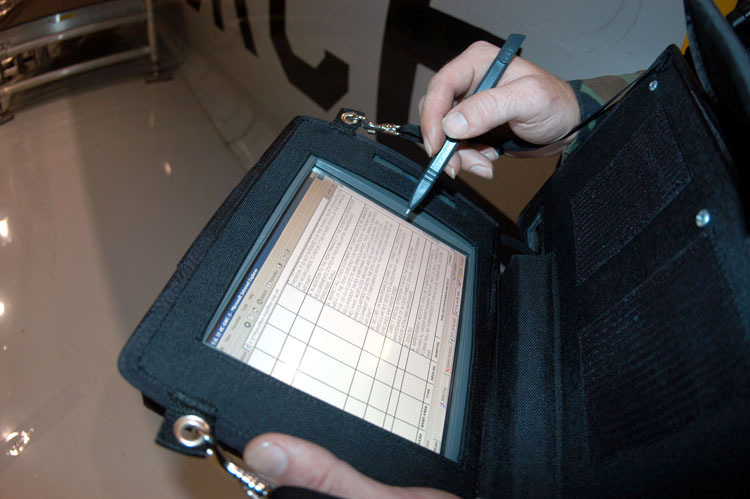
Wearable computers move to flightline

ROBINS AIR FORCE BASE, Ga. -- The new wearable computers allow maintainers to identify, order, ship and pay for parts directly from the flightline.